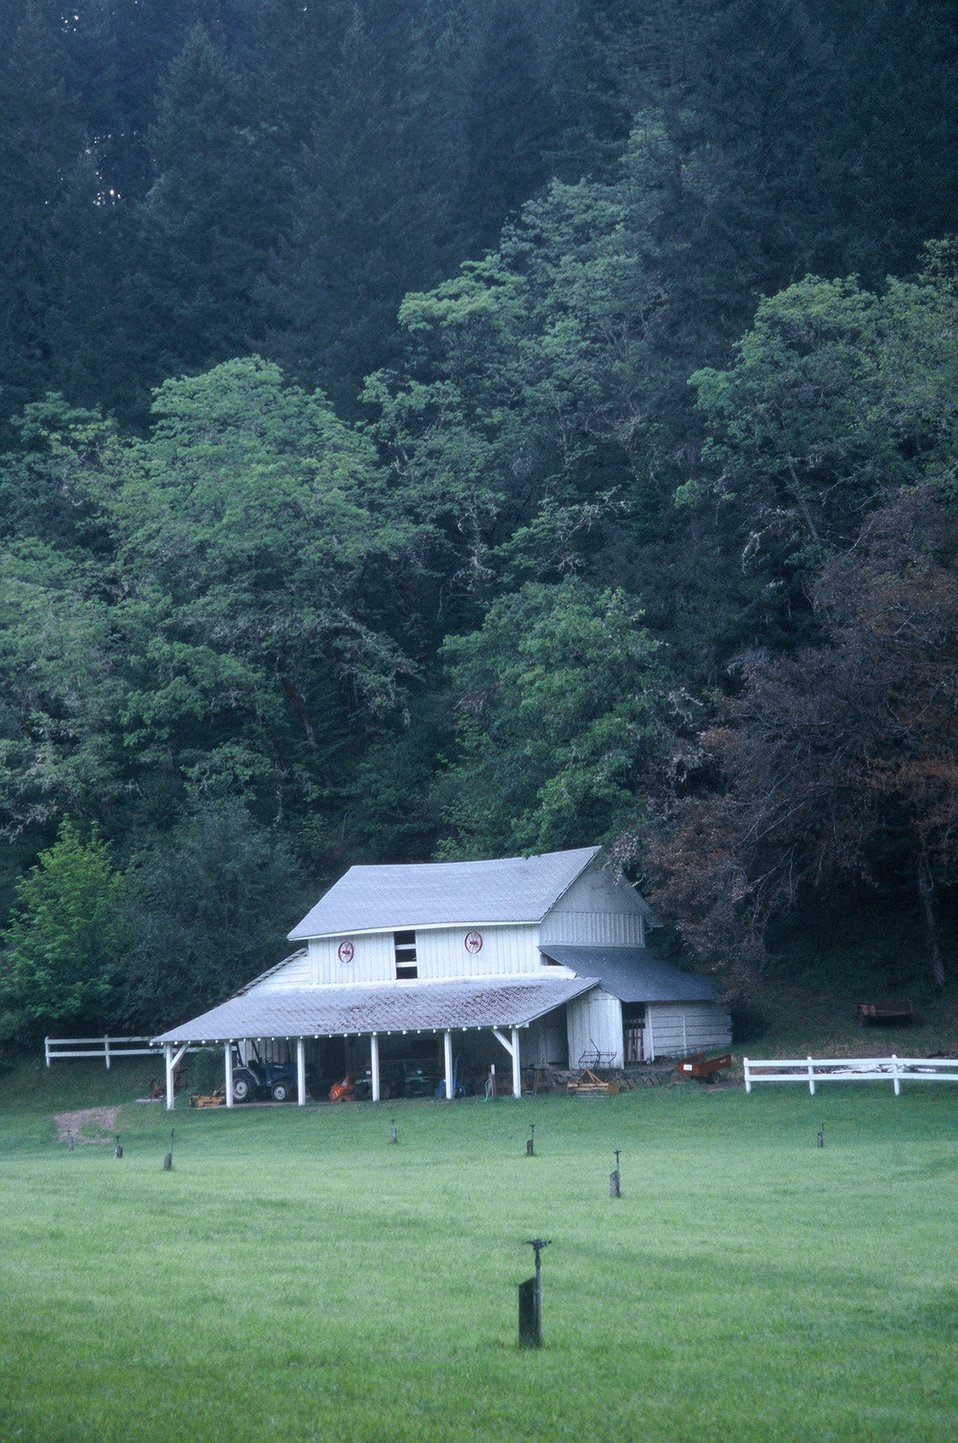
Wild section of the Rogue River from Grave Creek to Foster Bar May 19 to May 22.